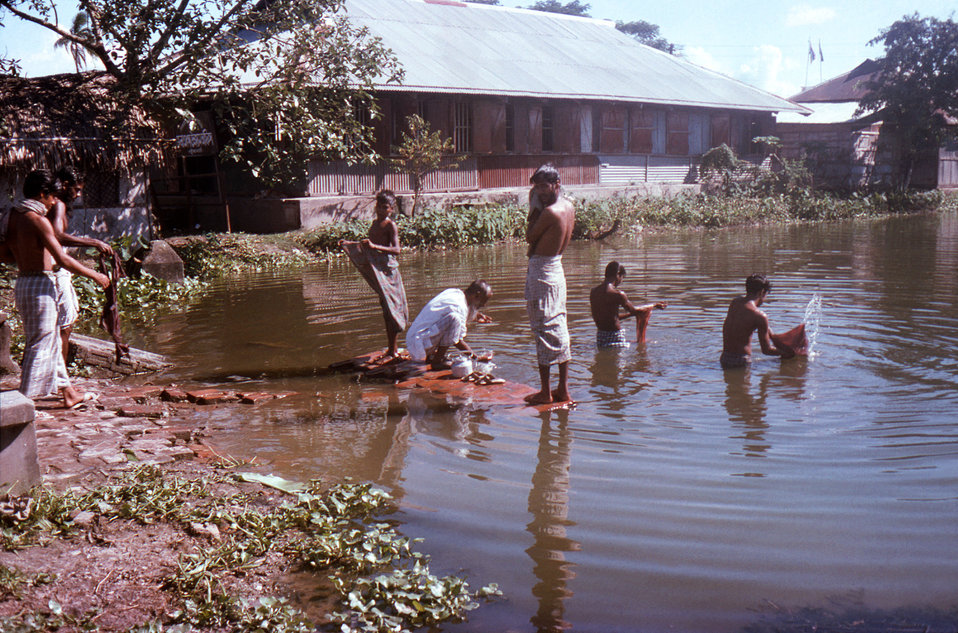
This October, 1975 image depicted a number of Bangladeshi men and boys, as they were bathing in a Patuakhali Town communal bathing tank. This site was located in the Patuakhali District, in South-western Bangladesh.